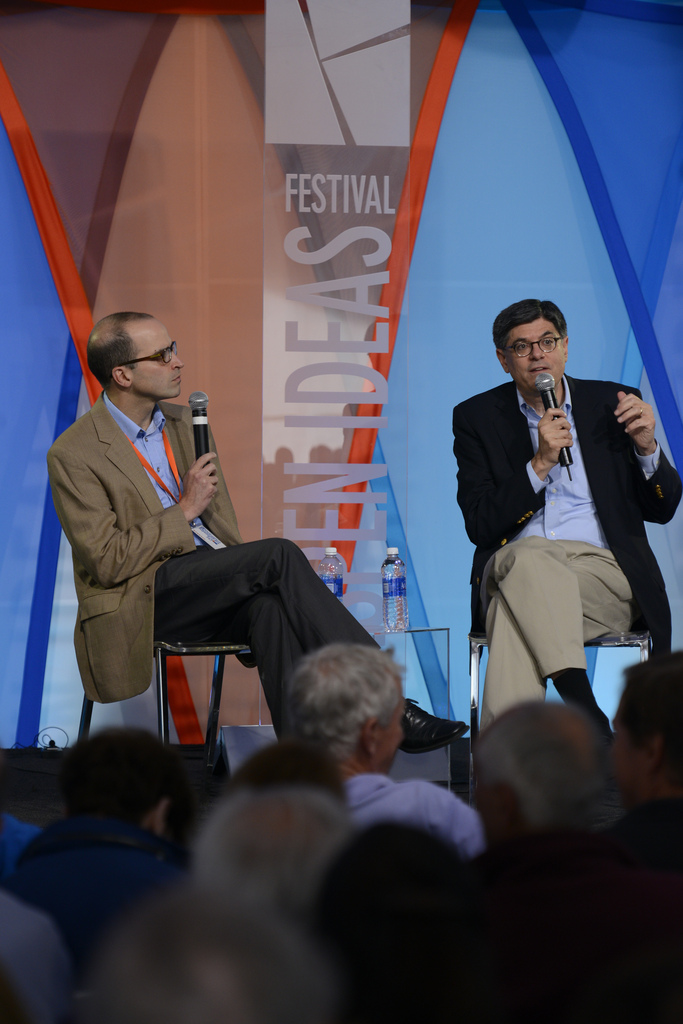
Secretary Lew at the Aspen Ideas Festival

June 30, 2013 - Secretary Lew participates in a conversation on the state of the economy with New York Times' Washington Bureau Chief David Leonhardt during the Aspen Ideas Festival.